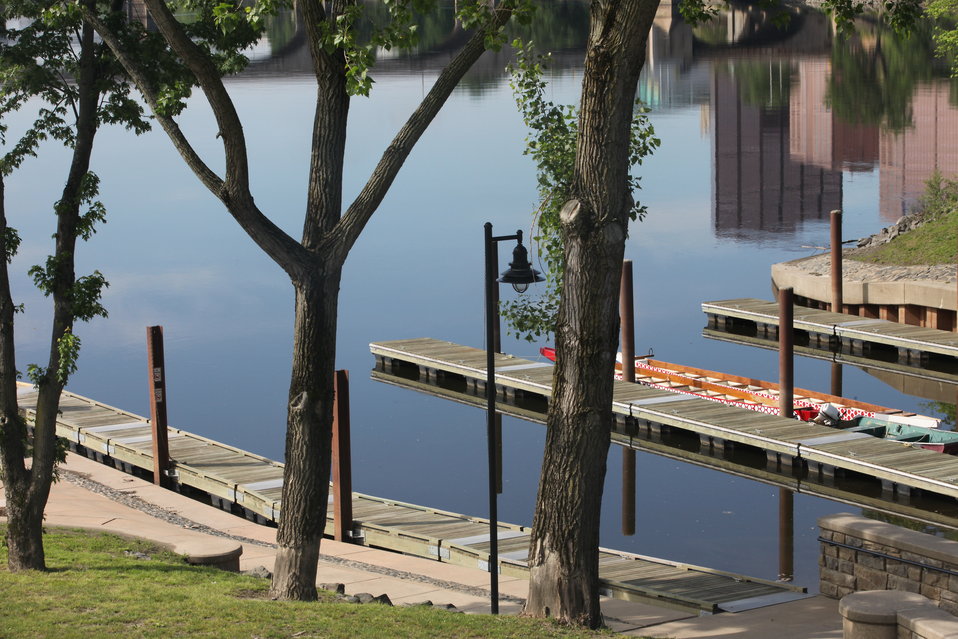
Docks view

View from the Connecticut River Community Boathouse, site of the Department of Interior Blueway designation signing event held on May 24, 2012. The Connecticut River is the first river in the nation to be named a 'Blueway'.